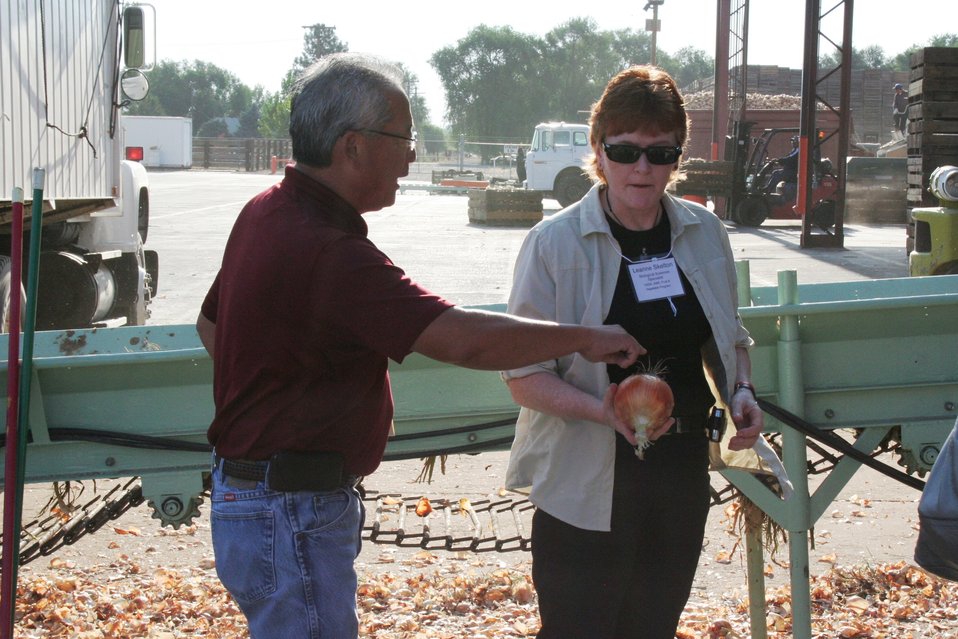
On the Road with Mike Taylor

FDA Deputy Commissioner Michael Taylor (not shown) and colleagues started a five-day tour of the Pacific Northwest on Sunday, Aug. 11, 2013 -- visiting Idaho, Oregon and Washington -- to get a first-hand look at produce production and irrigation operations, and to discuss the proposed Produce Safety Rule with growers, food industry representatives and state officials. This photo shows an employee of Murakami Produce with Leanne Skelton of the U.S. Department of Agriculture. Murakami Produce is a seasonal packer and shipper of dry bulb onions located in Ontario, Ore. For more about Mike's multi-region tour, read these FDA Voice blog posts:

• Hearing the Concerns of Maine Growers Striving for Agricultural Diversity
• On the Road with Mike Taylor: Touring the Pacific Northwest
• On the Road with Mike Taylor, Day 2: Frank Talk in Farm Country
• On the Road with Mike Taylor, Day 3: Families and Partnerships
• On the Road with Mike Taylor, Day 4: Looking to the Future